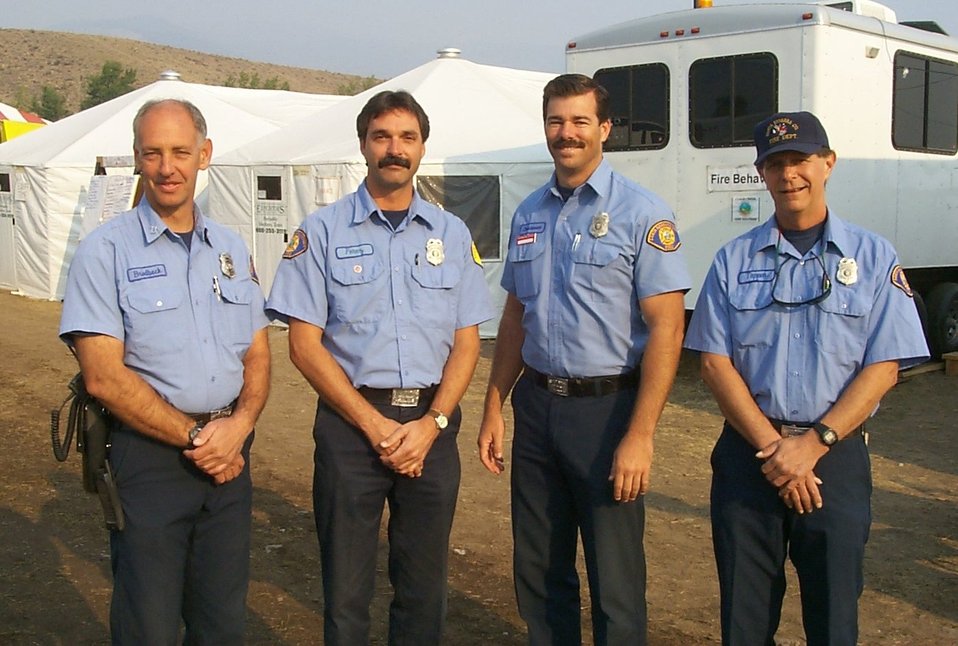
Fire fighters Fire Clearwater Fire Salmon Field Office USRD Upper Snake River District